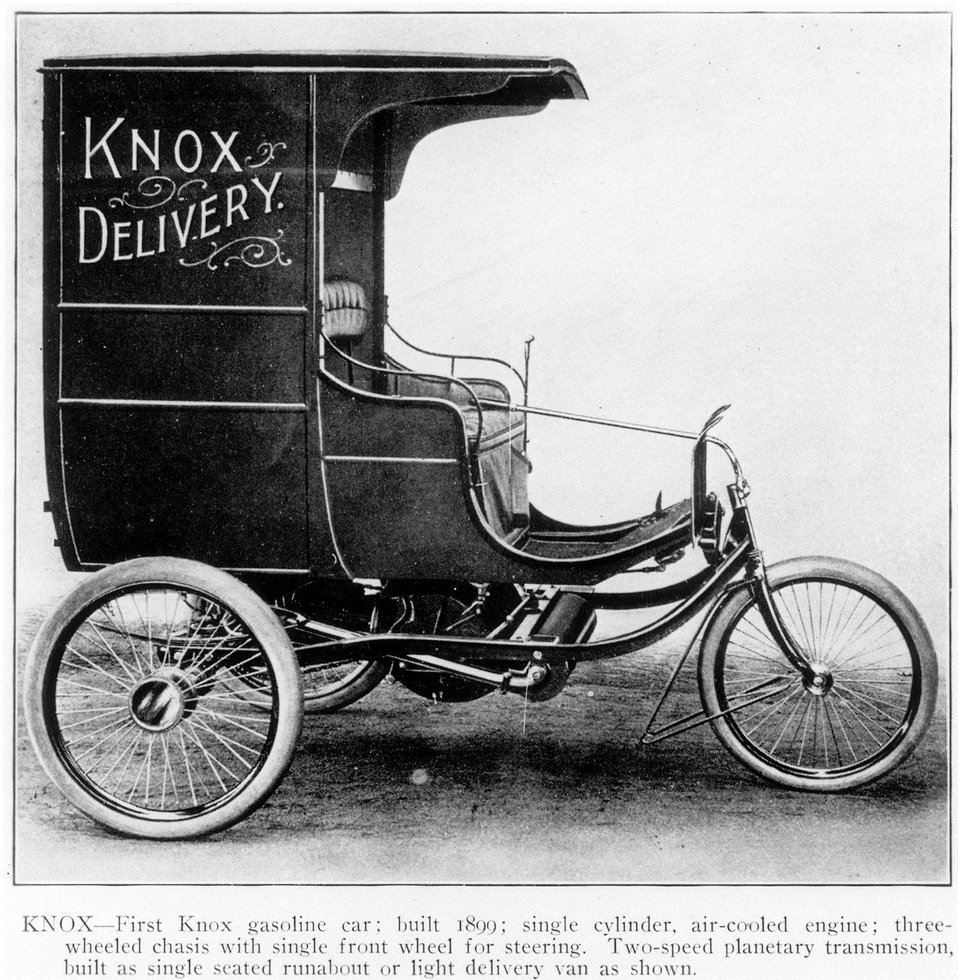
First Knox gasoline car, built 1899, single cylinder. air cooled engine, three wheel chasis with single front wheel for steering.